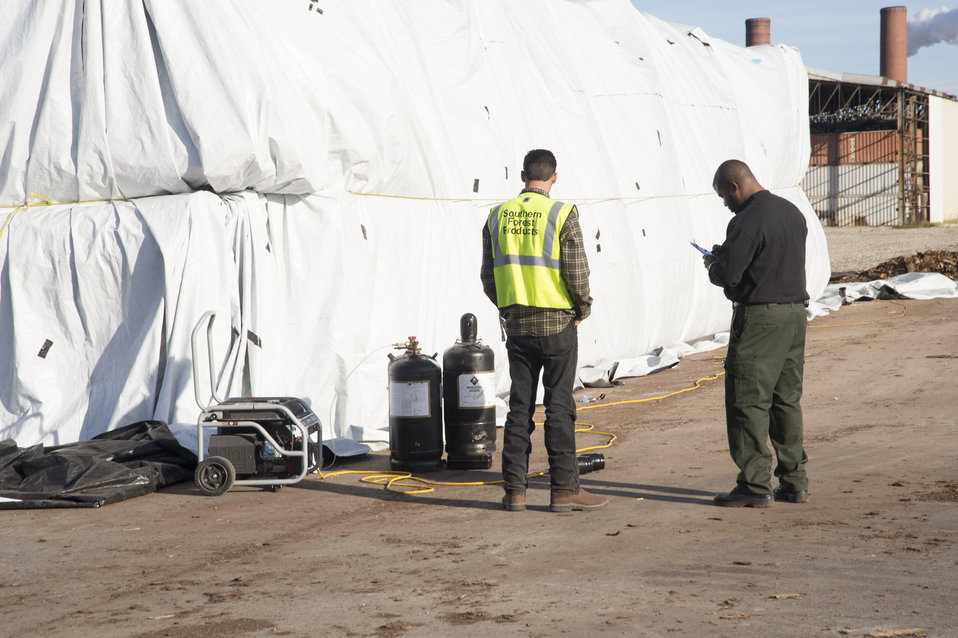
U.S. Department of Agriculture’s (USDA) Animal and Plant Health Inspection Service (APHIS) employee examines the fumigaion tent used on U.S. logs for export near the Port of New Orleans in New Orleans, LA on Wednesday, Nov. 20, 2013. The fumigation process prevents the spread of any bacteria or insect that might cause harm to a foreign country’s agriculture.